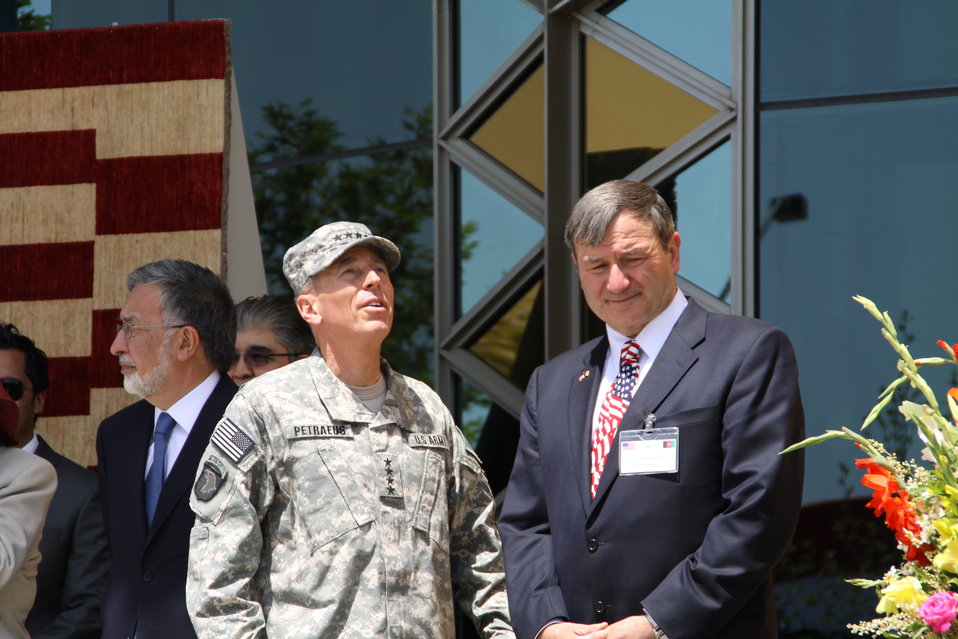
Kabul Official July 4th Celebration